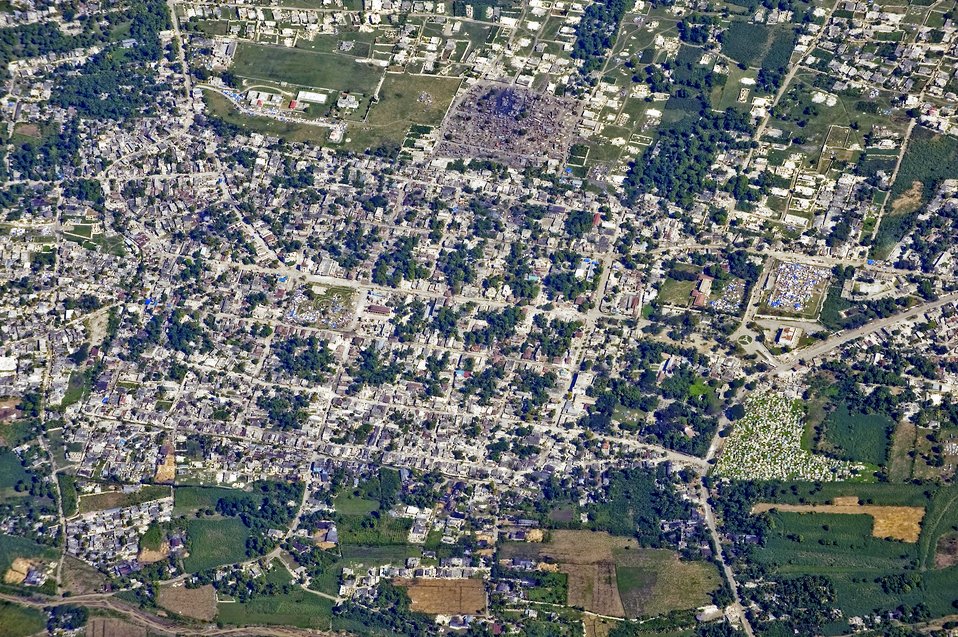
OC-135 crews assist from 15,000 feet

The OC-135B Open Skies aircraft flew over Haiti for more than three hours taking panoramic photos of Port-au-Prince, Haiti, Jan. 14, 2010, to help coordinate U.S. military support to the relief effort.